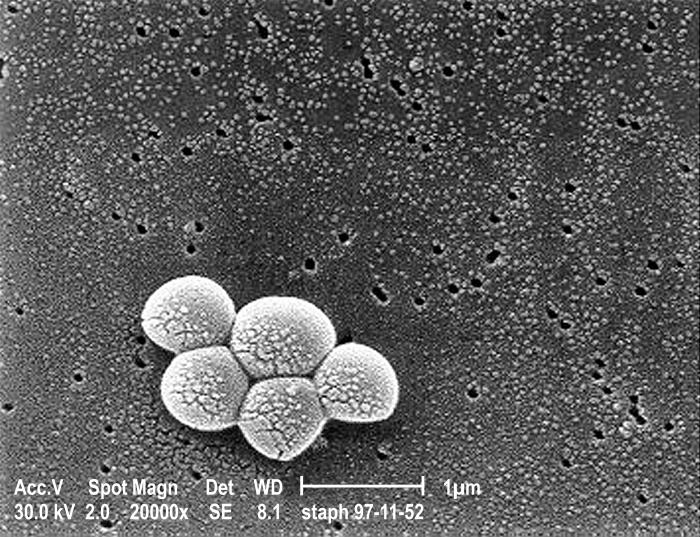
Magnified 20,000X, this scanning electron micrograph depicts a grouping of methicillin resistant Staphylococcus aureus (MRSA) bacteria. See PHIL 9994 for a colorized version of this image.